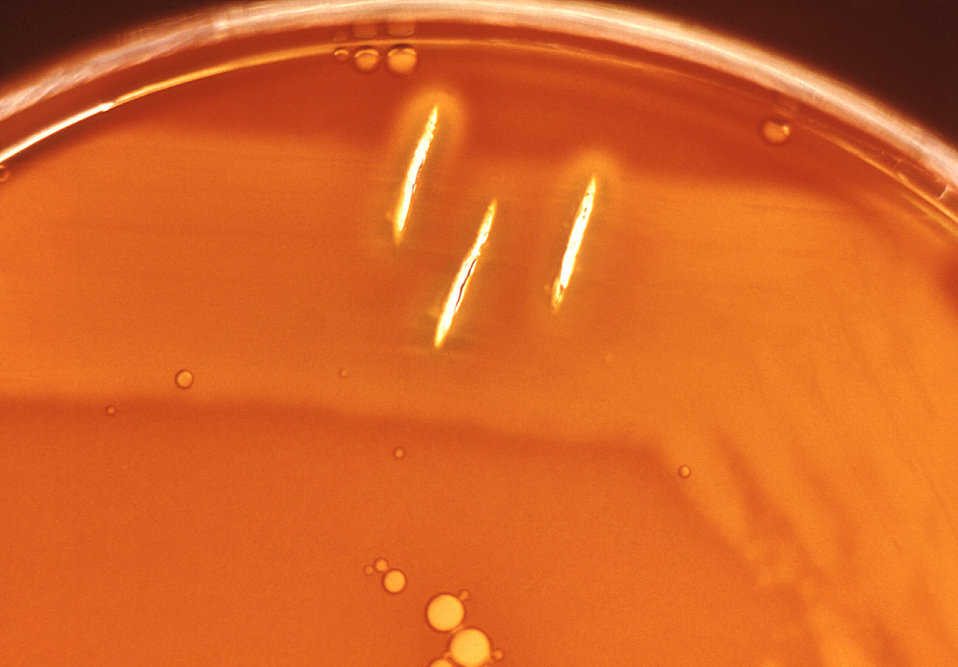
Magnified 10x, this image depicted a Petri dish filled with heart infusion agar medium containing 5% defibrinated rabbit blood, i.e., blood agar plate (BAP). After having been inoculated using both a streak and stab technique with a culture of Streptococcus anginosus bacteria, of the Gram-positive viridans group of streptococci (VGS), the BAP was incubated in a carbon dioxide enriched atmosphere at 35oC for 24 hours. In this view, one can see numbers of growing "surface" and "stab" colonies surrounded by what is known as "wide zone alpha hemolytic" (WZα) color changes. Characteristics of WZα reactivity are described as, "the area immediately adjacent to the colony has some red blood cells (RBCs), but an area outside of that may be completely, or nearly completely, cleared of RBCs. Therefore, there is no reactive zones where "complete" RBC hemolysis has occurred, as is the case in beta-hemolytic reactions, hence the Wide Zone "alpha" terminology.